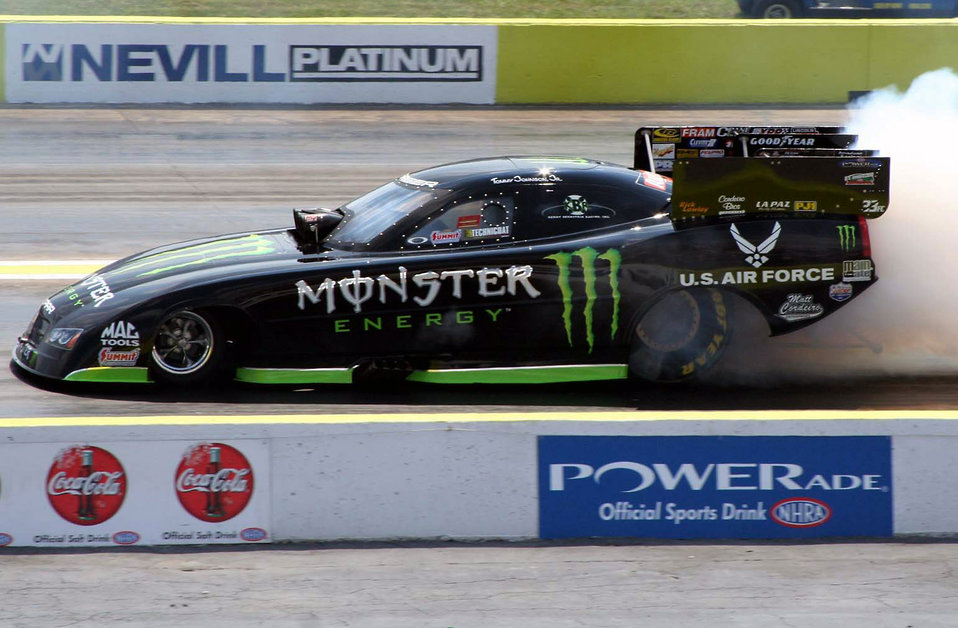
Smoking the tires

The Monster/U.S. Air Force funny car prepares for its first qualifying run for the O'Reilly National Hot Rod Association Fall Nationals Sept. 20 at the Texas Motorplex in Ennis. The Air Force is venturing into funny car racing by teaming up with Kenny Bernstein Racing and driver Tommy Johnson Jr.